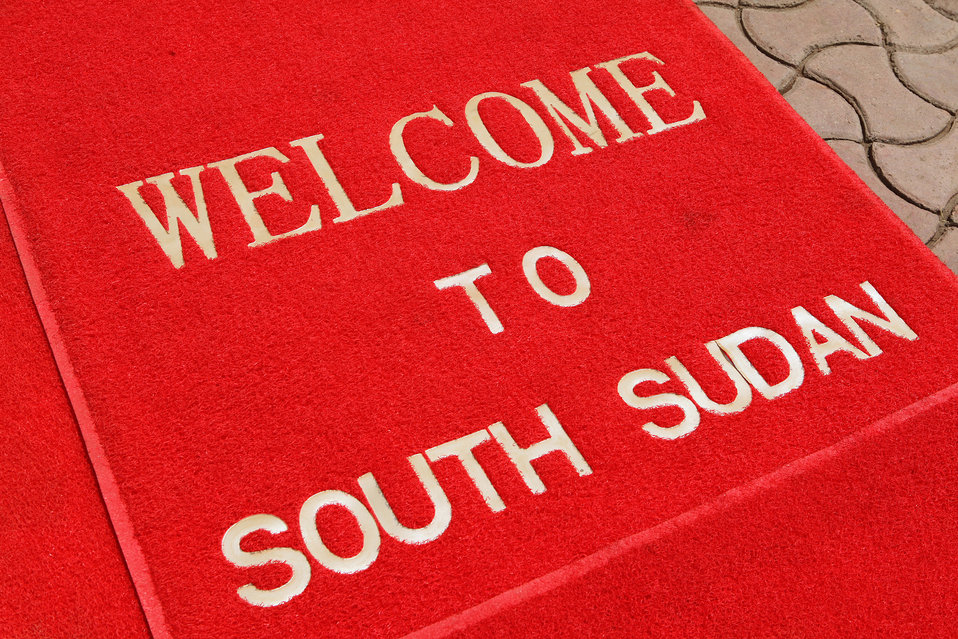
South Sudan Independence Day

The new South Sudan red carpet at Dr. John Garang Mabior's Memorial site in Juba, South Sudan on July 9, 2011.